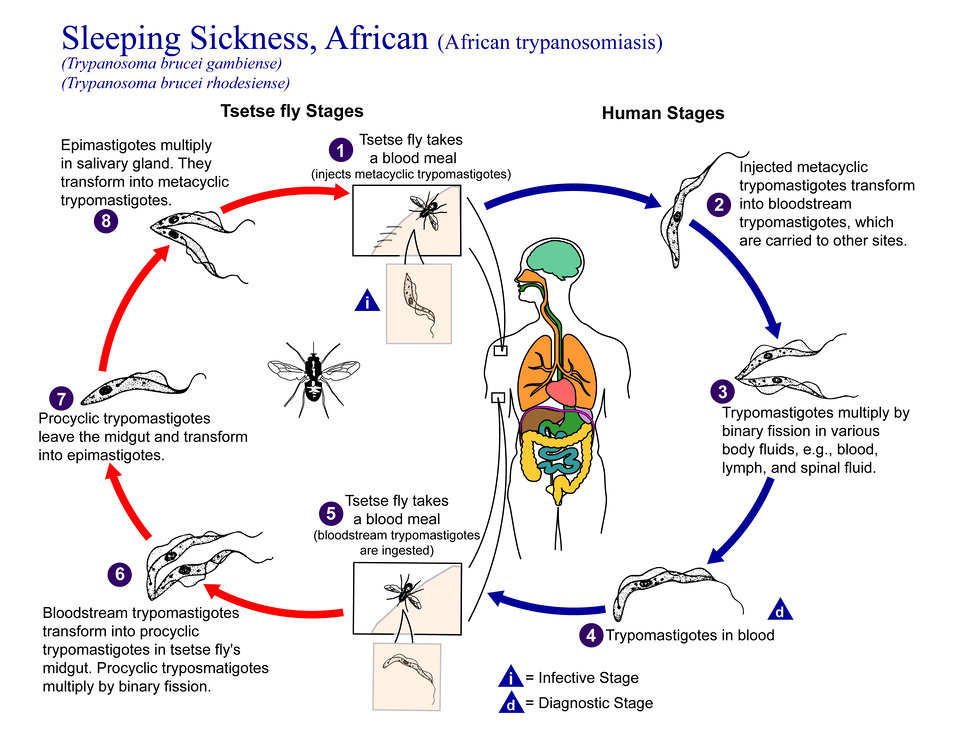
This illustration shows the life cycle of the parasitic agents that cause African Sleeping Sickness, or African trypanosomiasis.